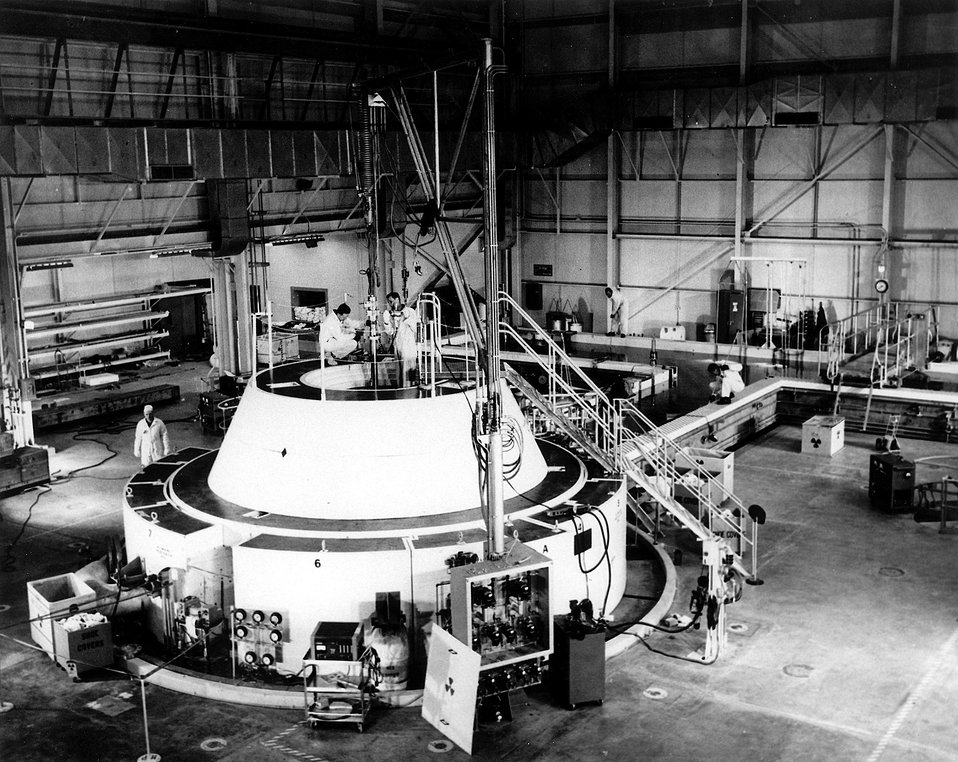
The 175-million-watt Engineering Test Reactor, National Reactor Testing Station. Circa 1965.